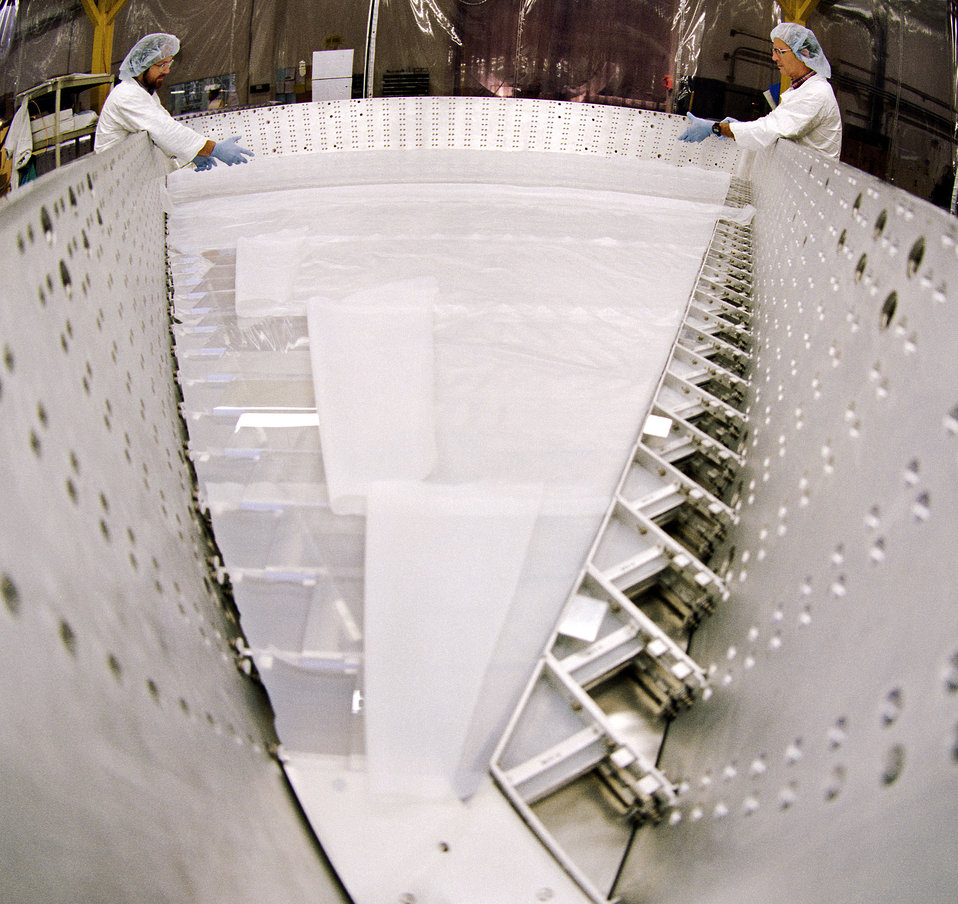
Jefferson Lab Thomas Jefferson National Accelerator Facility, in Virginia

95-353 DOE photo by Lynn Freeny 12-11-1995